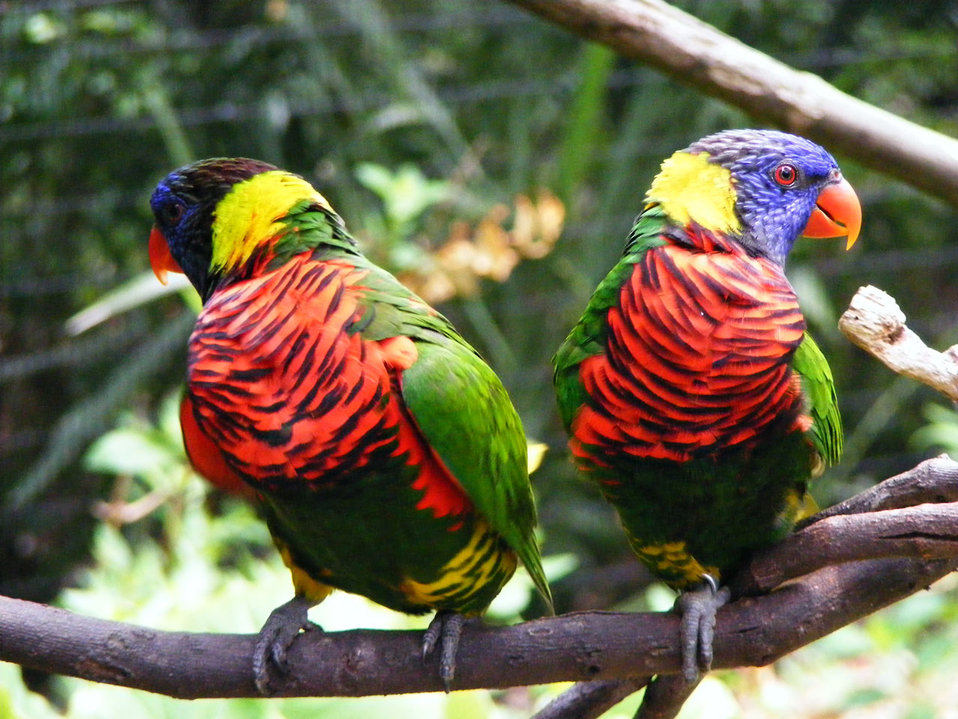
Mirror mirror

Two birds in at a zoo.